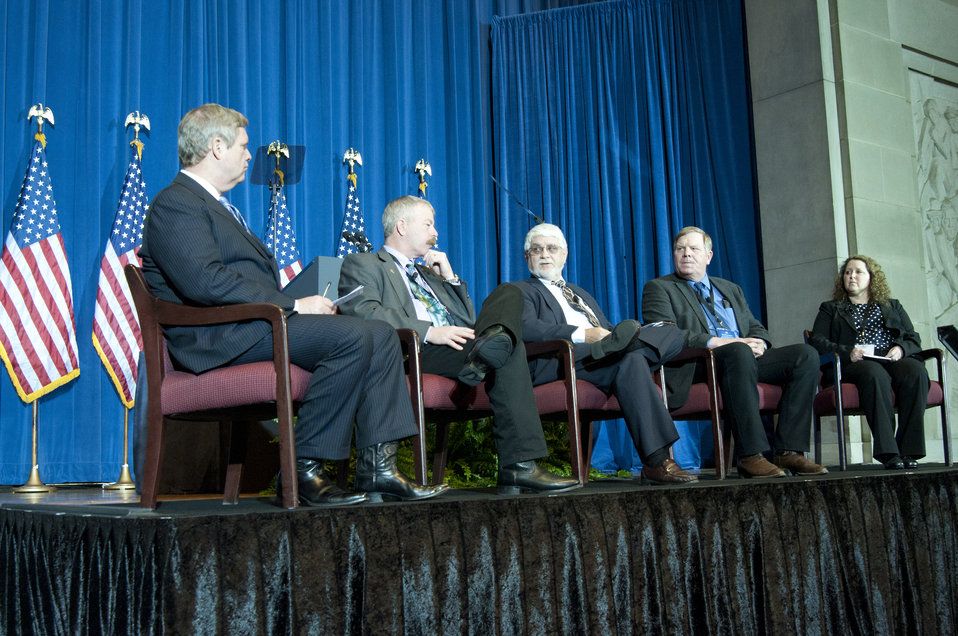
(L to R) Agriculture Secretary Tom Vilsack, Wyoming Wildlife and Natural Resources Trust (WY) –Sage Grouse conservation rancher Bob Budd, Longleaf Pine Alliance (AL) –Long Leaf Pine Conservation representative Rhett Johnson, from Daybreak Ranch in Hyde County South Dakota rancher Jim Faulstich, and Sustainable Northwest (OR) – Community-based forestry-Forest restoration representative Maia Enzer participated on the “Conserving Rural Lands: New Models for Working Lands and Wildlife” panel during a White House Conservation Conference, “Growing America’s Outdoor Heritage and Economy” at the Interior Department, Yates Auditorium in Washington, D.C., on Friday, March 2, 2012 The conference was part of President Barrack Obama’s, “America’s Great Outdoors Initiative” to spotlight community-driven conservation efforts and discussed how to build their success.